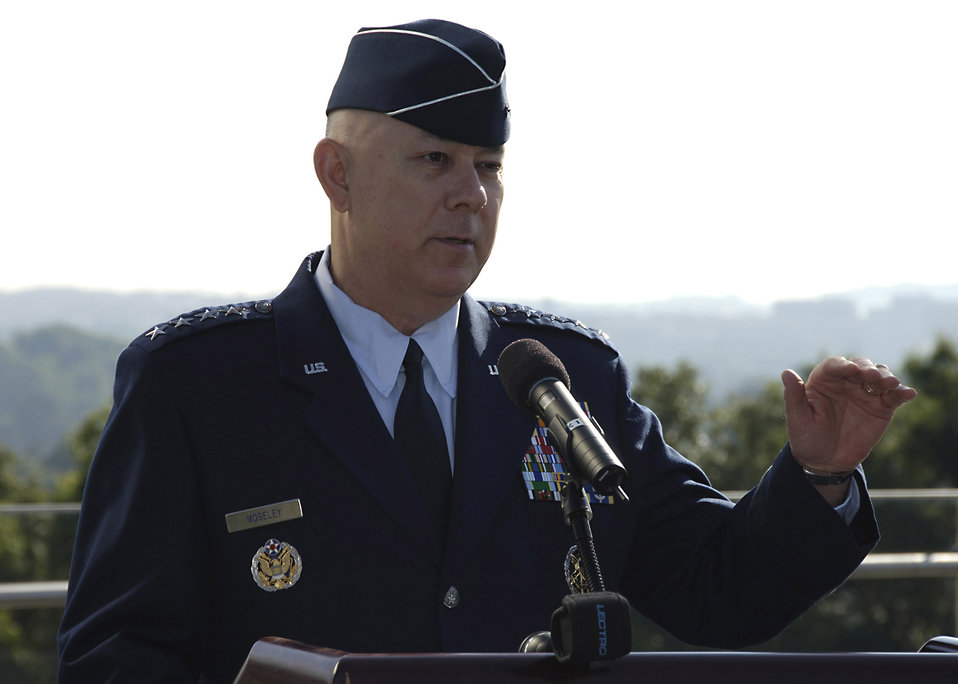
Air Force Combat Action Medal

Air Force Chief of Staff Gen. T. Michael Moseley presides over a ceremony at the Air Force Memorial in Arlington, Va., June 12 to award six Airmen the Combat Action Medal. The AFCAM is the first medal of its kind for the Air Force. The medal is awarded to Airmen who have been directly in harm's way, engaging enemy forces.